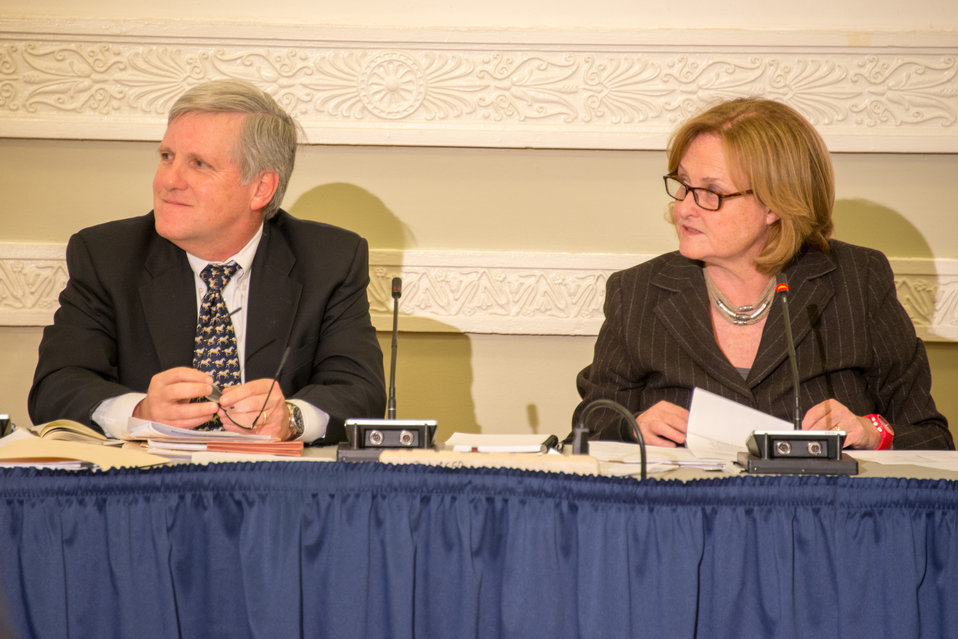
Public Meeting of Advisory Council on Wildlife Trafficking

Members of the Advisory Council on Wildlife Trafficking

From left to right: David J. Hayes, Distinguished Visiting Lecturer of Law, Stanford Law School; Judith A. McHale, President and CEO
Cane Investments, LLC and Chair of the Advisory Council